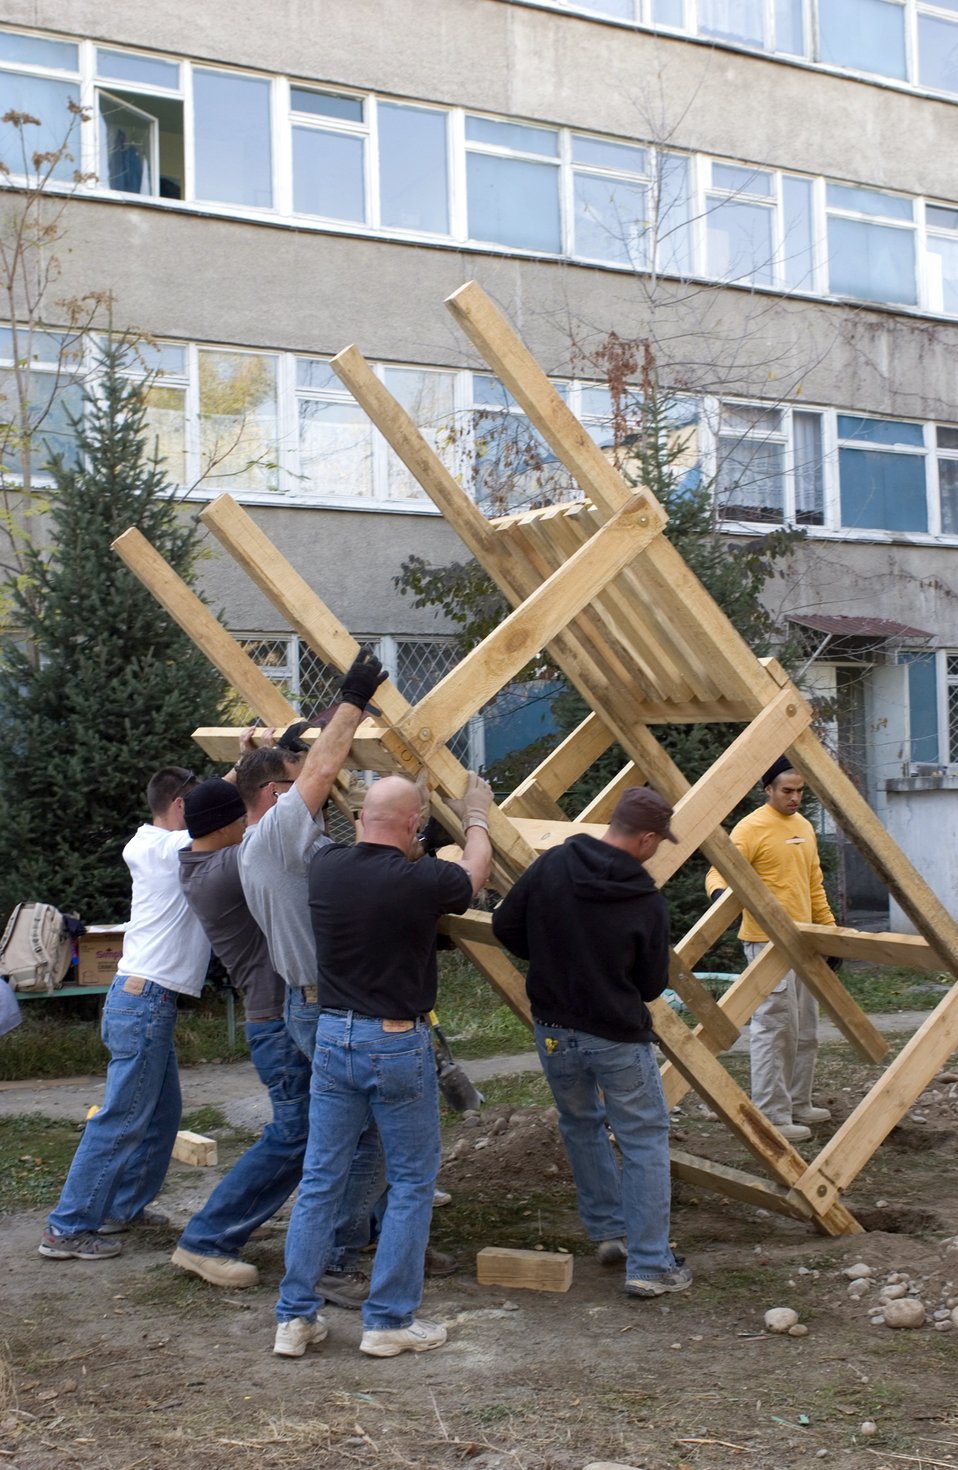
Cancer kids

BISHKEK, Kyrgyzstan (AFPN) -- Members of the Manas Air Base Outreach Society set up one half of the structure for the new play fort at a children's cancer center in this city. The Airmen volunteer their day off to do the work at the center.